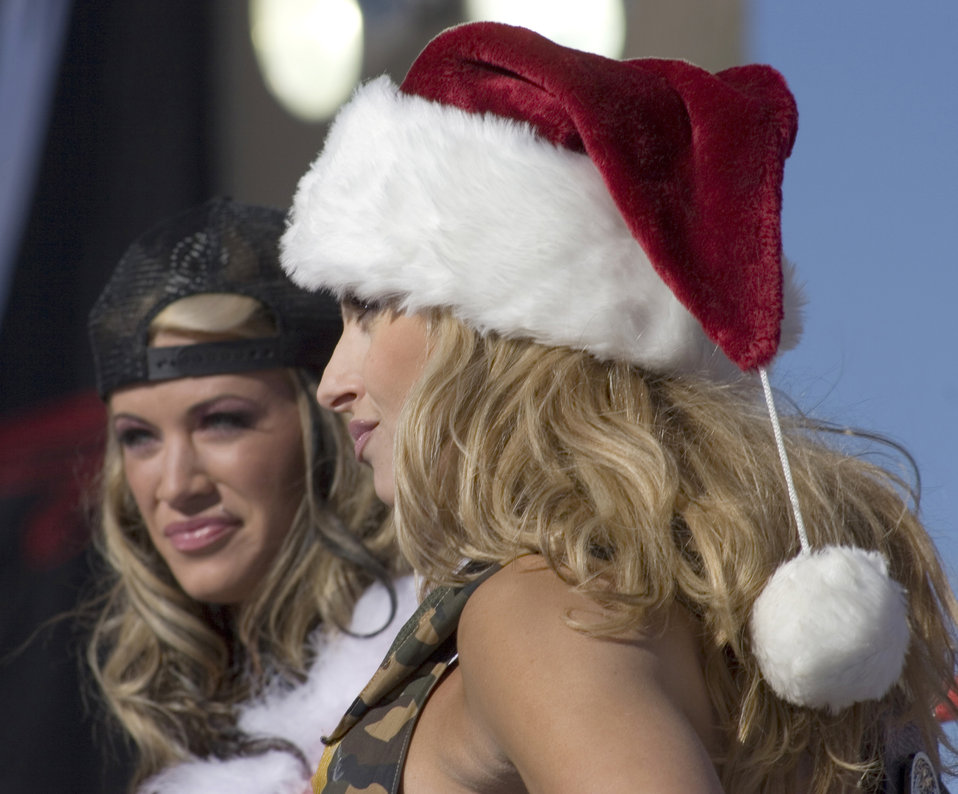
RAW power

BAGRAM AIRFIELD, Afghanistan (AFPN) -- World Wrestling Entertainment Women's Champion Trish Stratus and Ashley, the winner of the 2005 WWE Diva Search, prepare for their tag team match here. The match was part of the WWE's